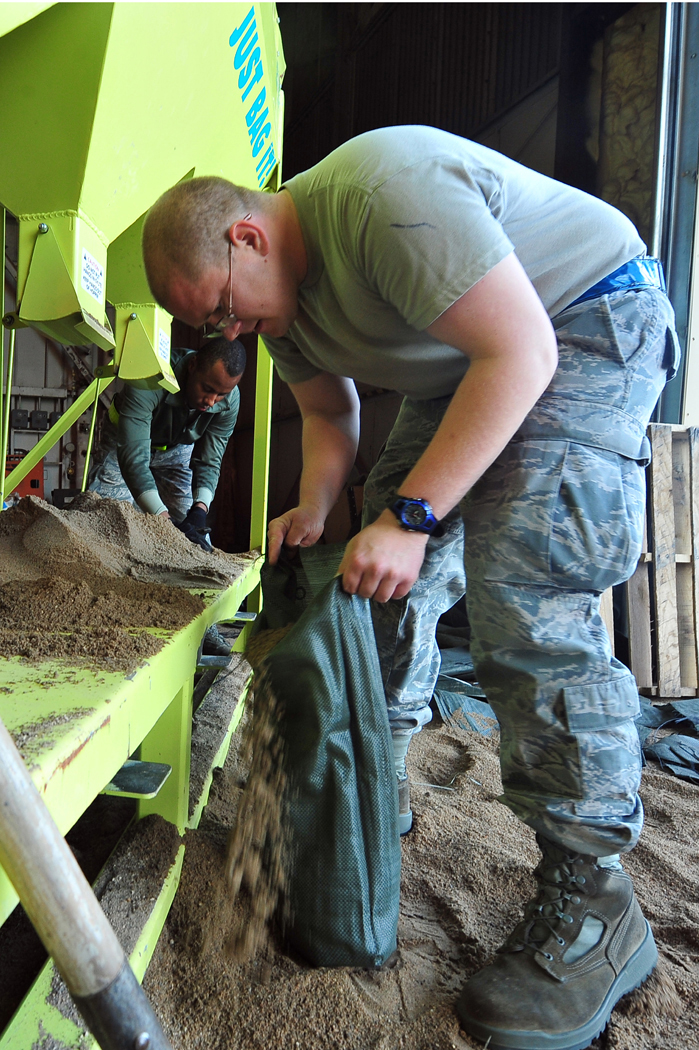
Minot Airmen fight flood

Staff Sgt. David Powell fills sandbags June 22, 2011, to be used to try and stop raising flood water threatening Minot, N.D. Sergeant Powell is a crew chief with the 5th Aircraft Maintenance Squadron at nearby Minot Air Force Base.